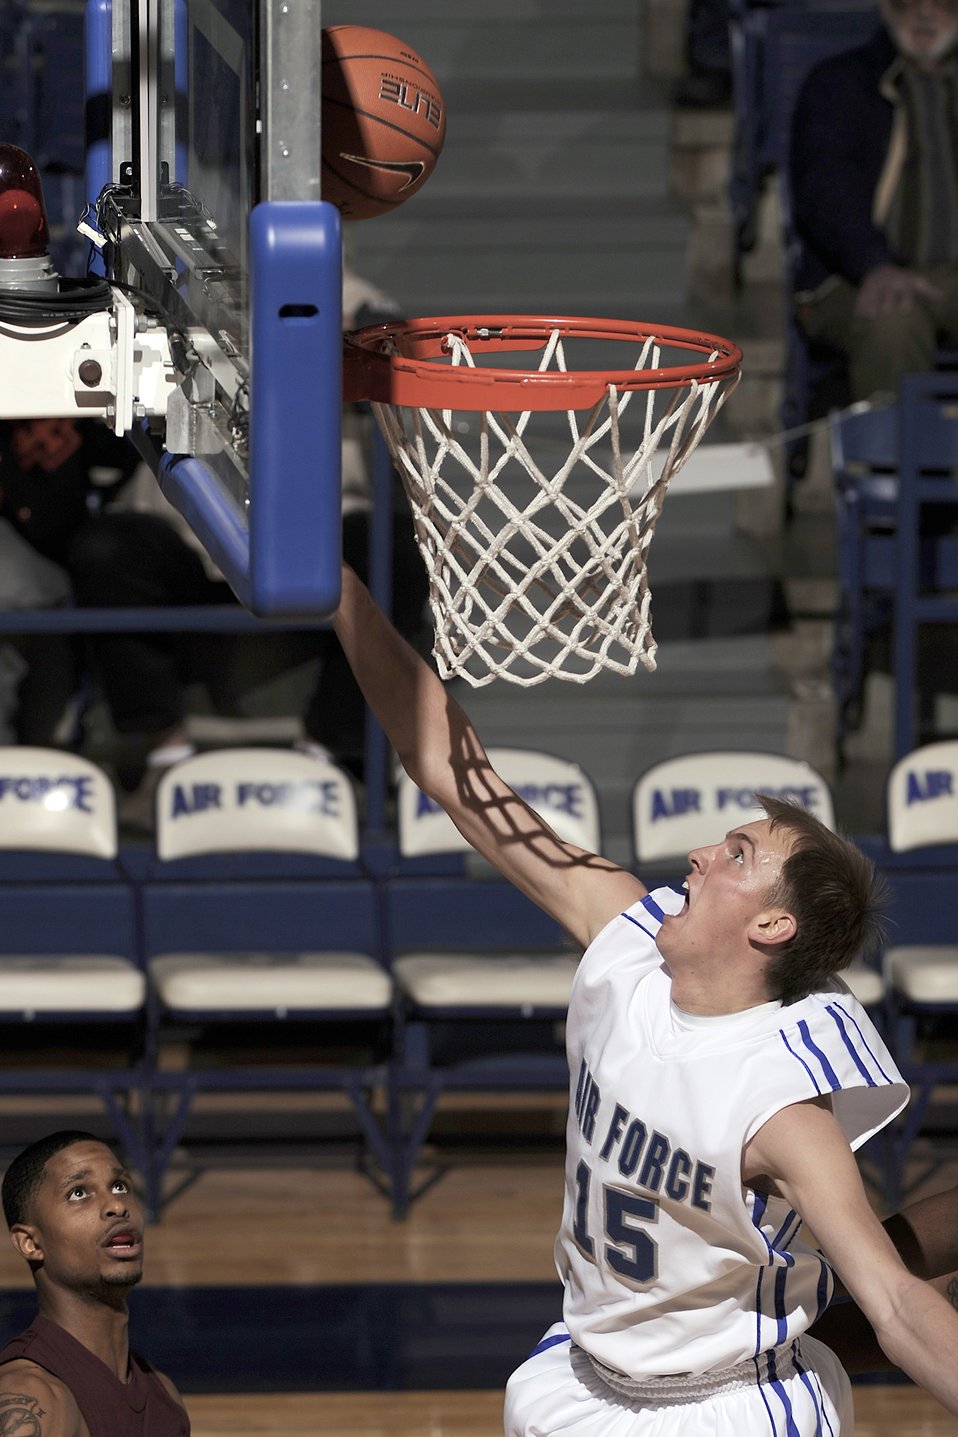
In your face!

Air Force Academy junior Taylor Stewart goes in for the layup as the Falcons defeated North Carolina Central 73-56, Dec. 11, 2010, at the Academy's Clune Arena in Colorado Springs, Colo. Stewart finished the game with a season-high 10 points, and collected a season-best 7 rebounds.